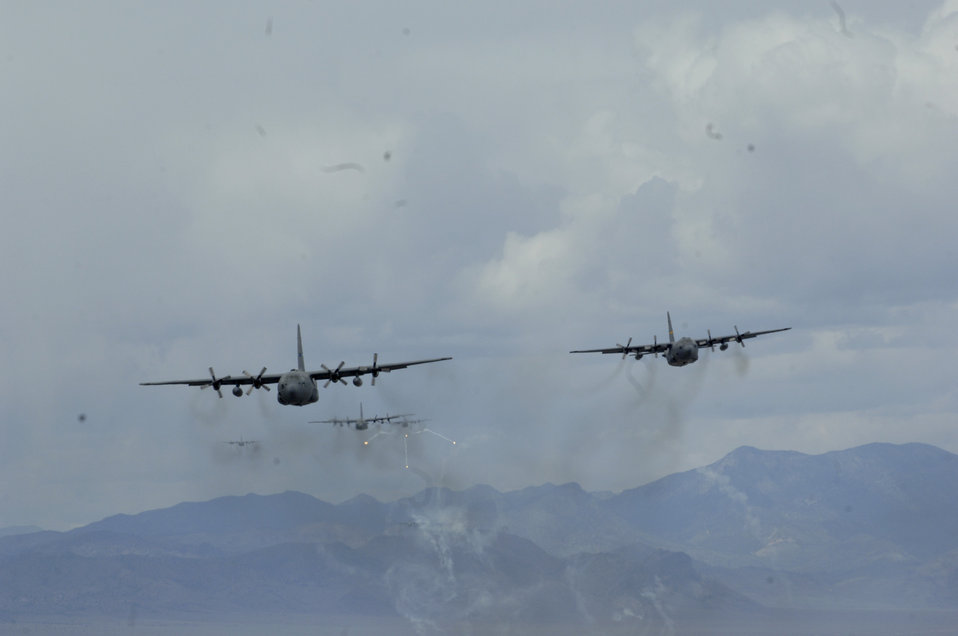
Mobility exercise

A formation of C-130 Hercules flies May 18, 2011, during an exercise above the Nevada Test and Training Range.